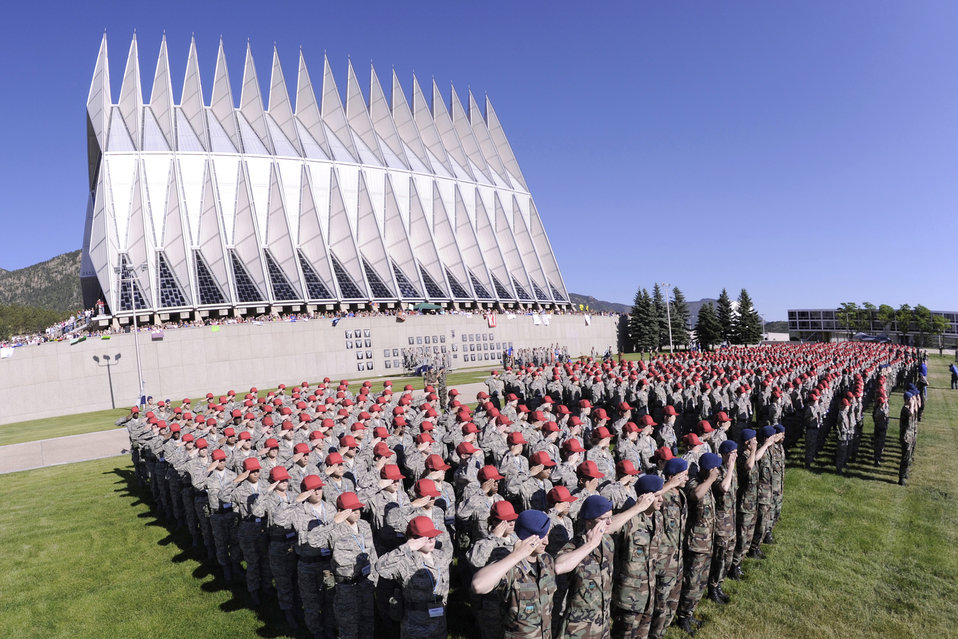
Air Force Academy's Class of 2014

Cadet cadre and Class of 2014 basic cadets salute during the playing of the